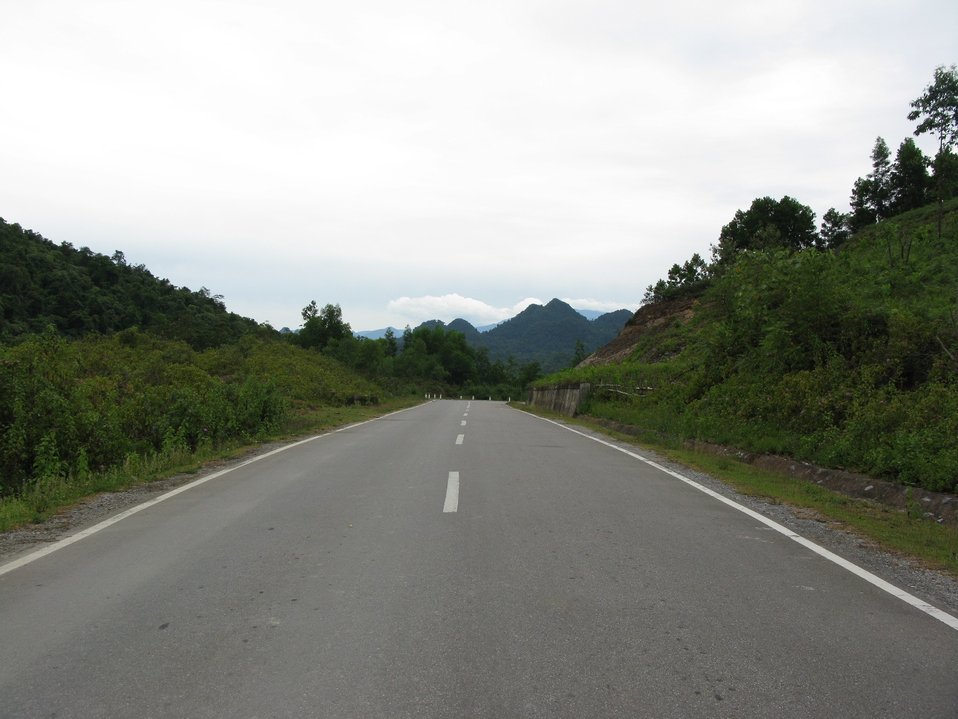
Asian Highway 131 (National Road 12A) in Ky Anh District, Ha Tinh Province, Vietnam Tiếng Việt: Quốc lộ 12A mới ở Kỳ Anh, Hà Tĩnh. Đoạn này không thấy được vẽ trên bản đồ, có lẽ do mới hoàn thành cách đây không lâu.